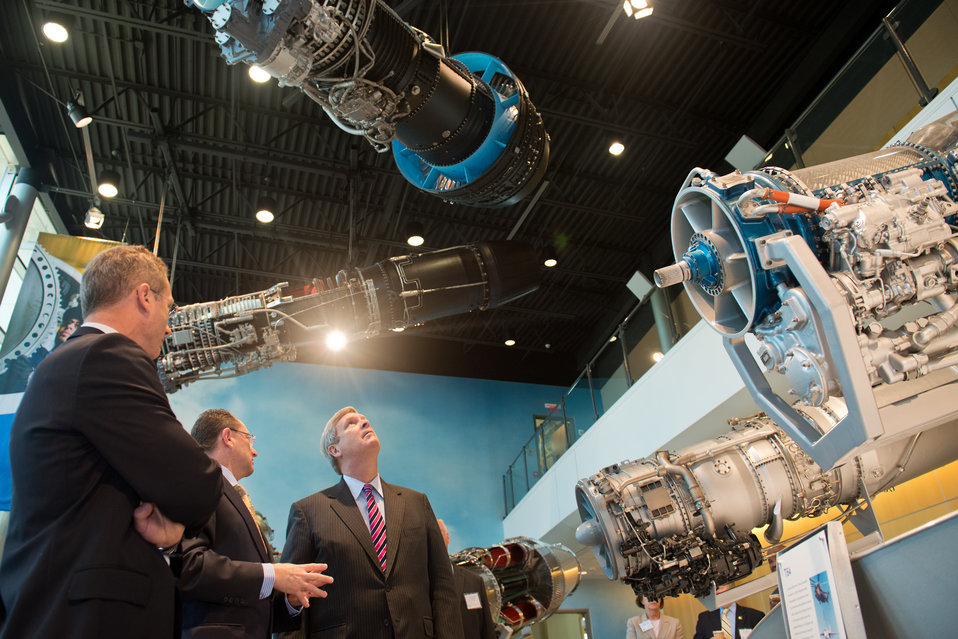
Agriculture Secretary Tom Vilsack studies representations of General Electric Aviation’s jet engine chronology at the company’s Learning Centre in suburban Cincinnati, OH on Wednesday, June 27, 2012. Secretary Vilsack was in Ohio to highlight the U.S. Department of Agriculture’s (USDA) collaboration with the Ohio Aerospace Institute, air carriers and producer groups to develop a Midwest-regional approach to providing renewable jet fuel at GE Aviation’s Cincinnati-area facilities.